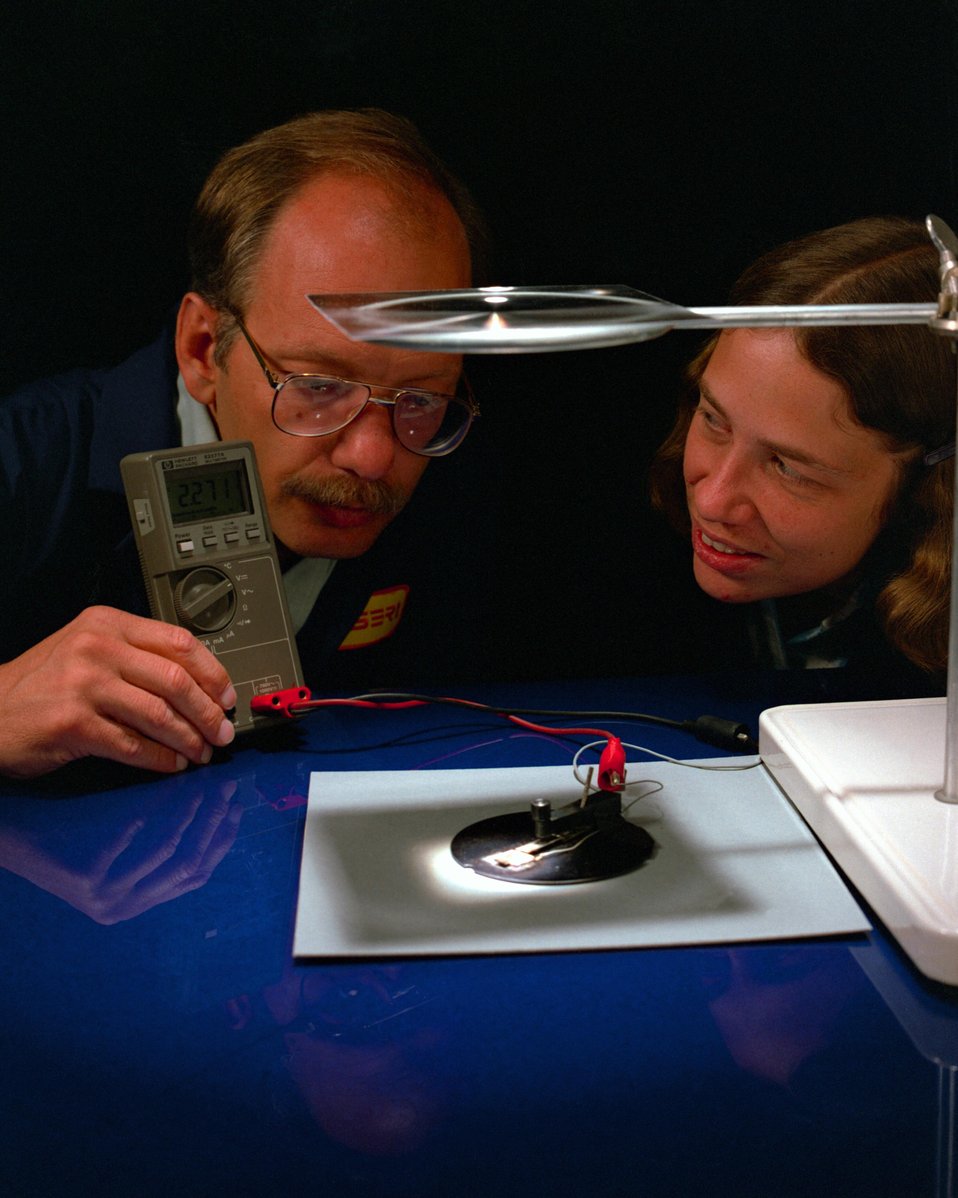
Two Highly-efficient solar cells are rapidly moving towards commercialization thanks to NREL researchers testing the voltage of their award-winning gallium indium phosphide/gallium arsenide tandem solar cell, which has achieved record efficiencies in convening sunlight to electricity. By producing a concentrator cell with an efficiency greater than 30%.